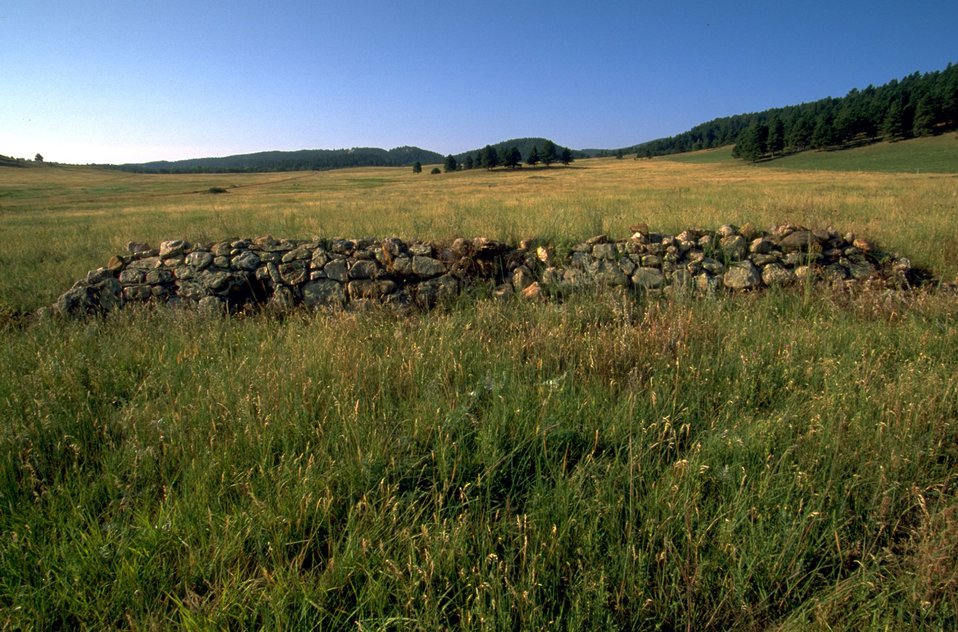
Cavalry Jumps at the south end of Fort Meade